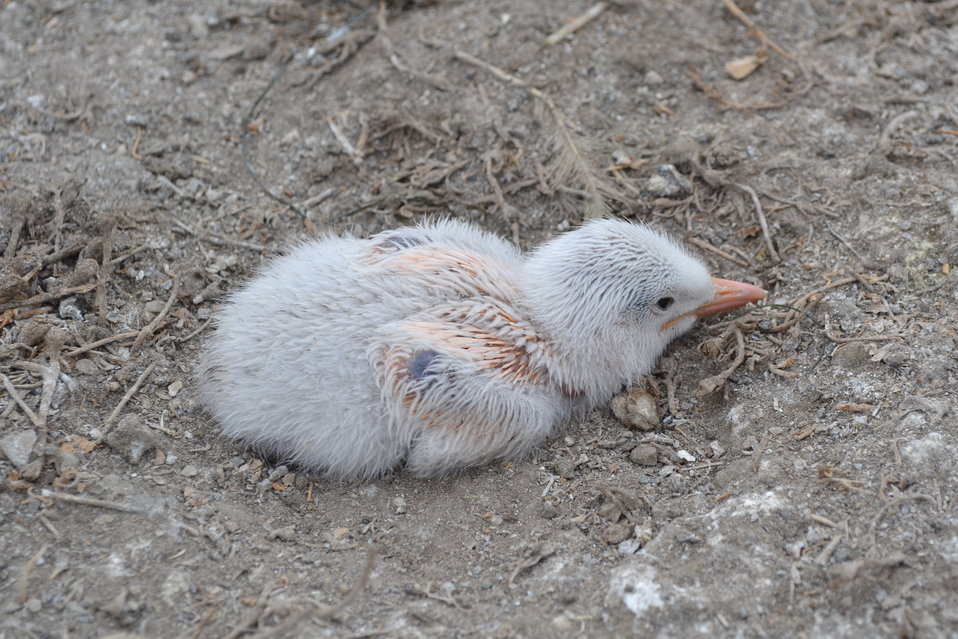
Elegant tern (Sterna elegans) chick

Just a few days old, the feathers are already starting to grow in through the downy feathers. Elegant terns flock to south San Diego Bay by the tens of thousands to breed and feed each summer